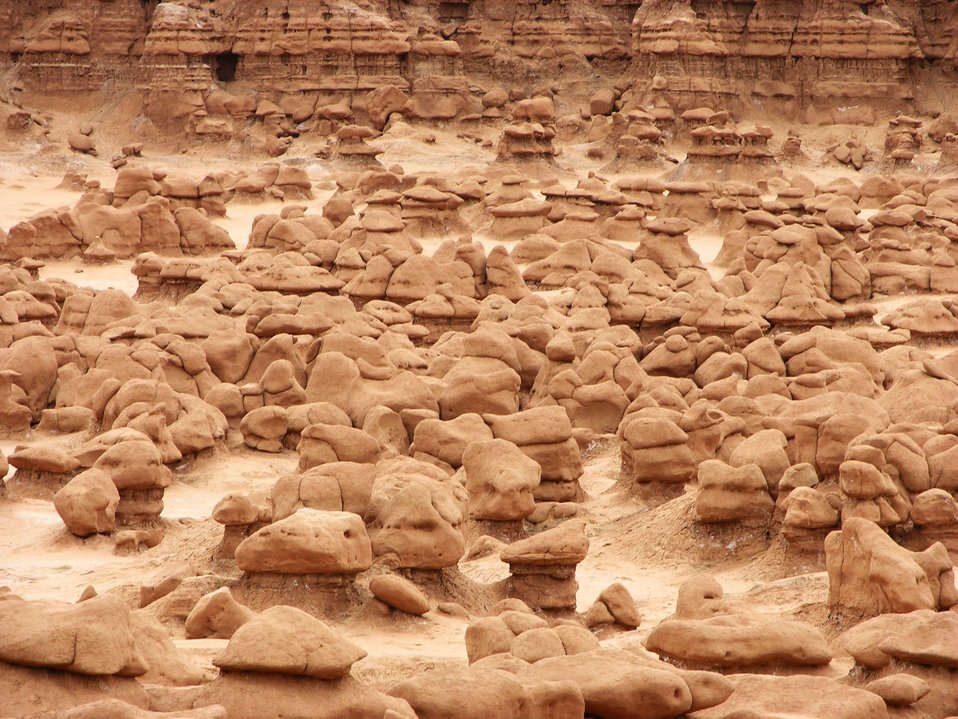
Goblin Valley State Park. Wind and water eroded features.